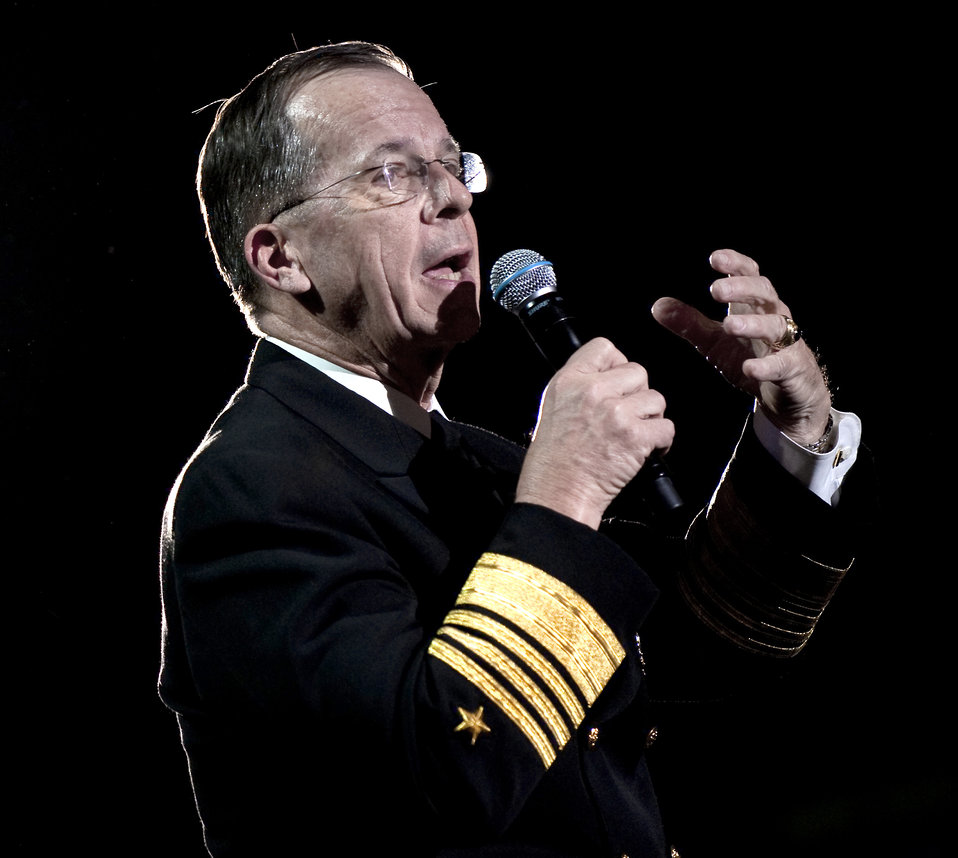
Helping homeless veterans

Navy Adm. Mike Mullen, chairman of the Joint Chiefs of Staff, talks about the need to help homeless veterans May 9, 2011, to the audience at the 2011 Robin Hood Foundation Gala in New York City. The Robin Hood foundation has targeted poverty in New York City by supporting and developing organizations that provide direct services to poor New Yorkers.